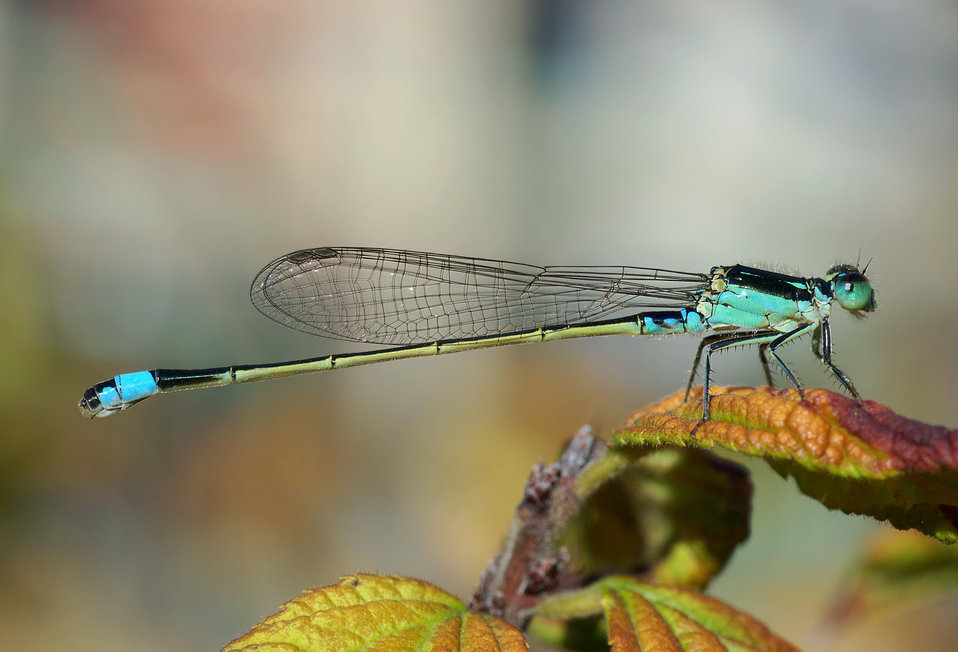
Name Ischnura senegalensis Family Coenagrionidae Common Bluetail, a widespread damselfly in Africa, the Middle East, Southern and Eastern Asia. Français : Ischnura senegalensis, une Demoiselle très commune en Afrique, dans le Moyen Orient, en Asie du Sud et de l'Est. 日本語: アオモンイトトンボ Polski: Ischnura senegalensis - gatunek ważki z rodziny łątkowatych (Coenagrionidae) Português: Ischnura senegalensis, uma libélula muito comum em África, no Médio Oriente e no sul e este da Ásia. Camera Details:
Camera: PENTAX K10D
Lens: TAMRON SP AF90mm F/2.8 Di (Model272E)